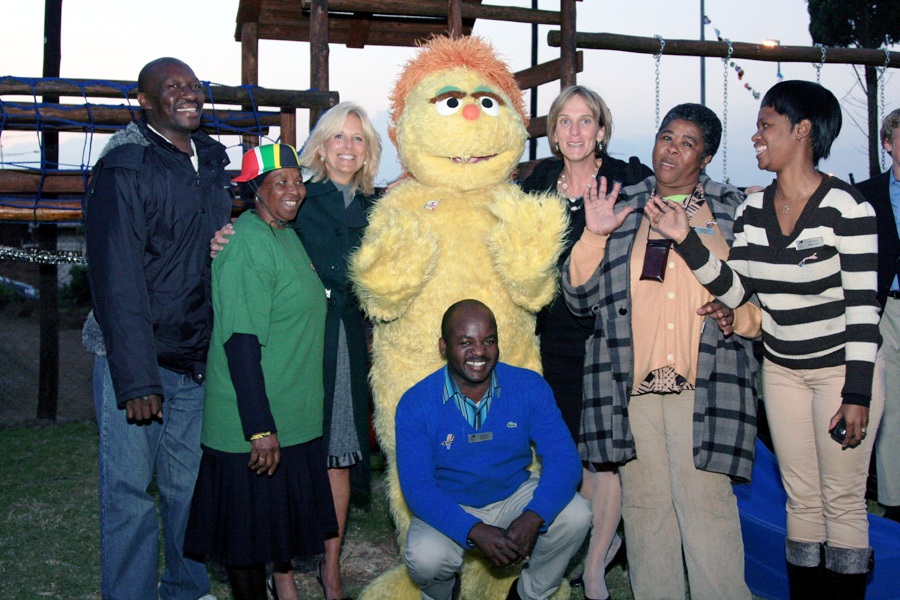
Dr. Jill Biden, Liz Berry Gips, Mapetla Staff, and Kami Pose for a Photo

Dr. Jill Biden, wife of Vice President Joseph Biden, and Liz Berry Gips, wife of U.S. Ambassador to the South Africa Donald H. Gips, pose for a photo with Mapetla staff and Kami, in Soweto, Johannesburg, South Africa, on June 10, 2010. Kami is a character on Takalani Sesame ('be happy Sesame' in Venda), which is the South African version of the children's television program Sesame Street.